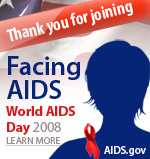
thank you for facingaids female2